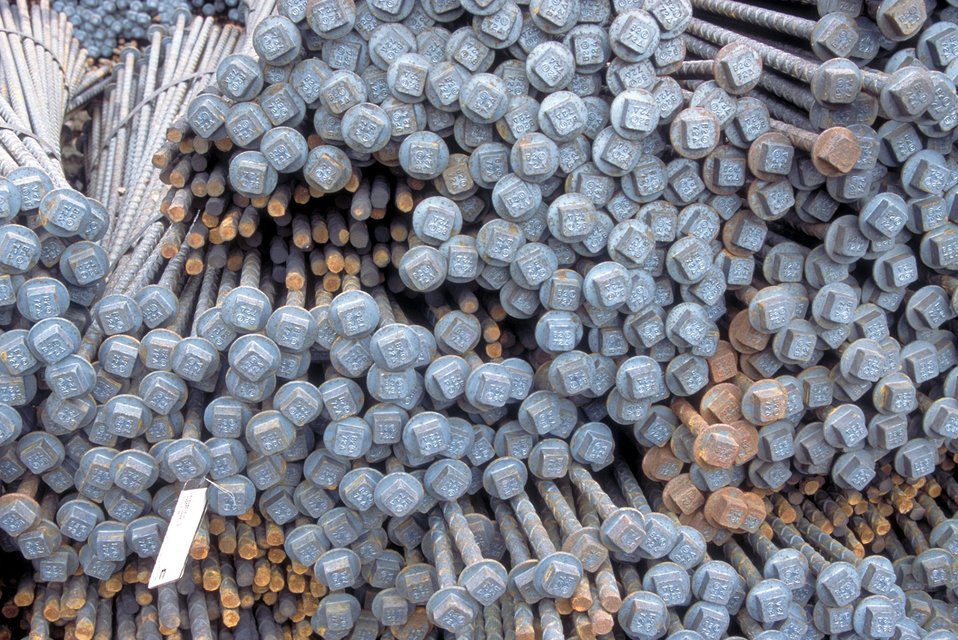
Coal production near Price, Utah.